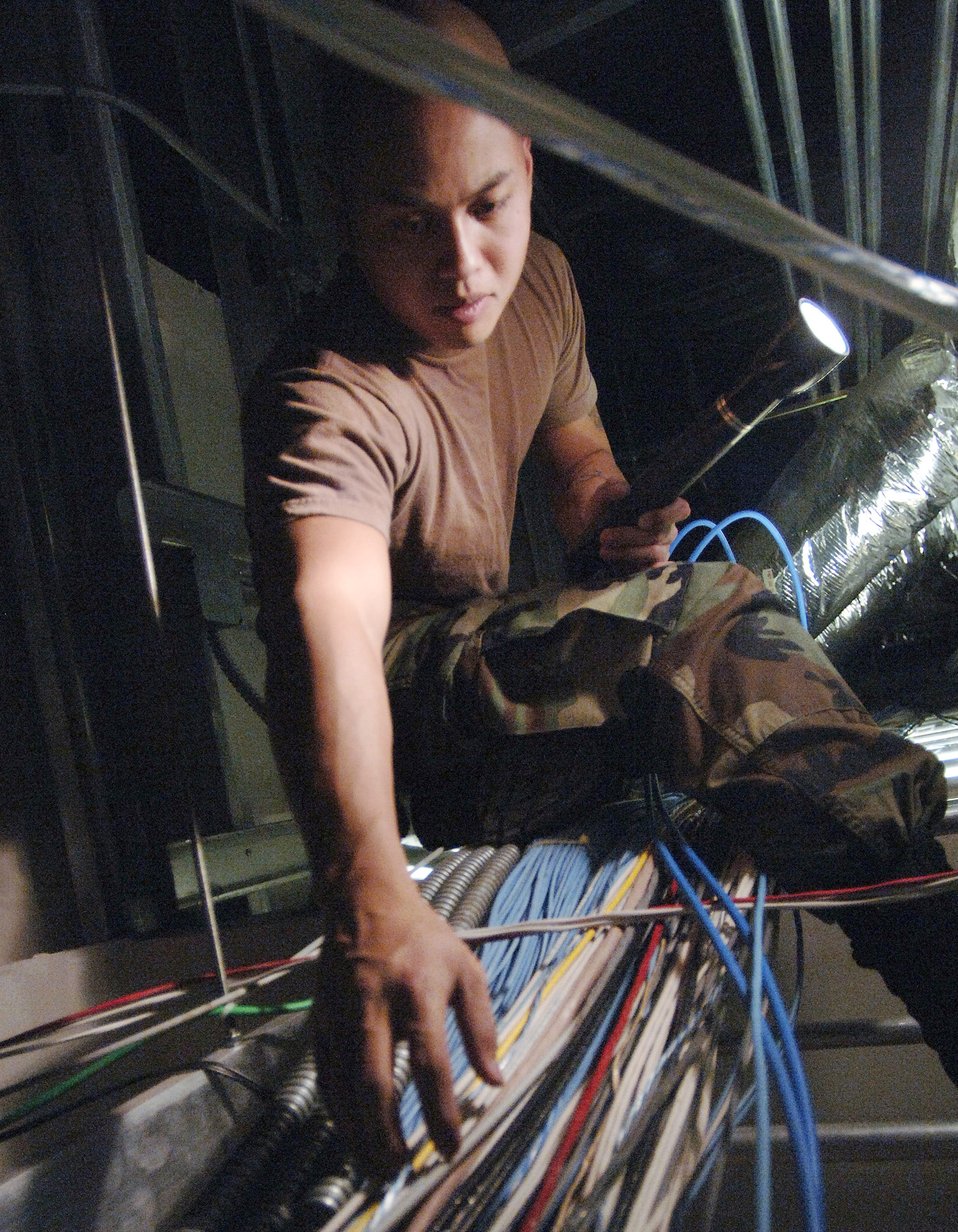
Feeding the flow

LACKLAND AIR FORCE BASE, Texas (AFPN) -- Staff Sgt. Isaiah Balingit sorts through cable in a crawlspace at the Air Force News Agency. The cable upgrade will bring broadcast-quality digital video to viewers of Around the Air Force and Air Force Report. Sergeant Balingit is an AFNEWS technician.